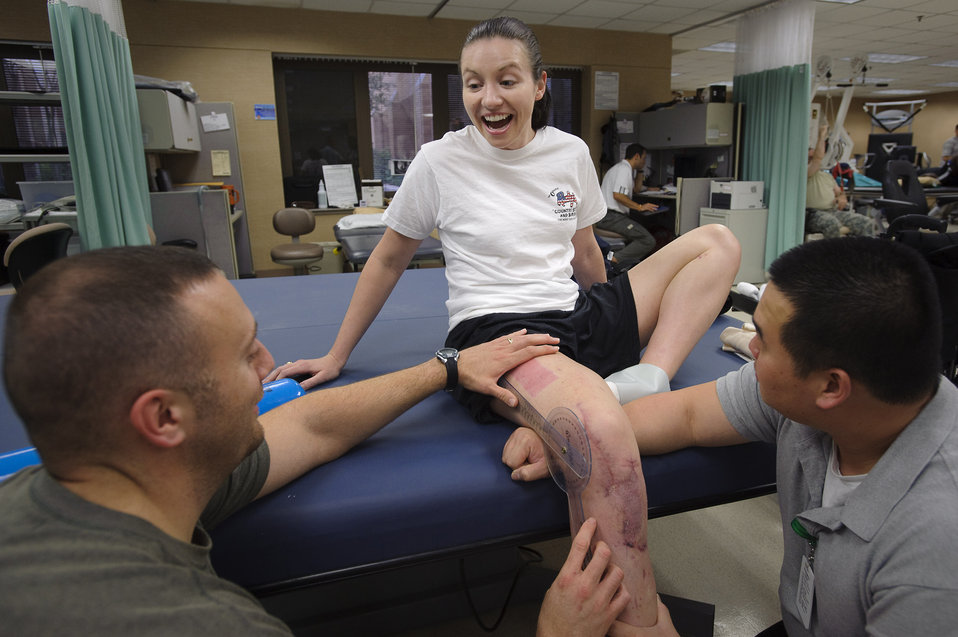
Recovering from injuries

Capt. wendy Kosek (c) 19th Airlift Wing legal officer, Little Rock Air Force Base, TX, reacts to her latest range of motion test conducted by John Inzinna (l) and Anhtuan Pham physical therapy assistants with Book Army Medical Center?s outpatient physical therapy clinic. When she started physical therapy Kosek had just 30 degrees of mobility in her knee and is currently up to 63, her goal is a 10 degree increase per week.